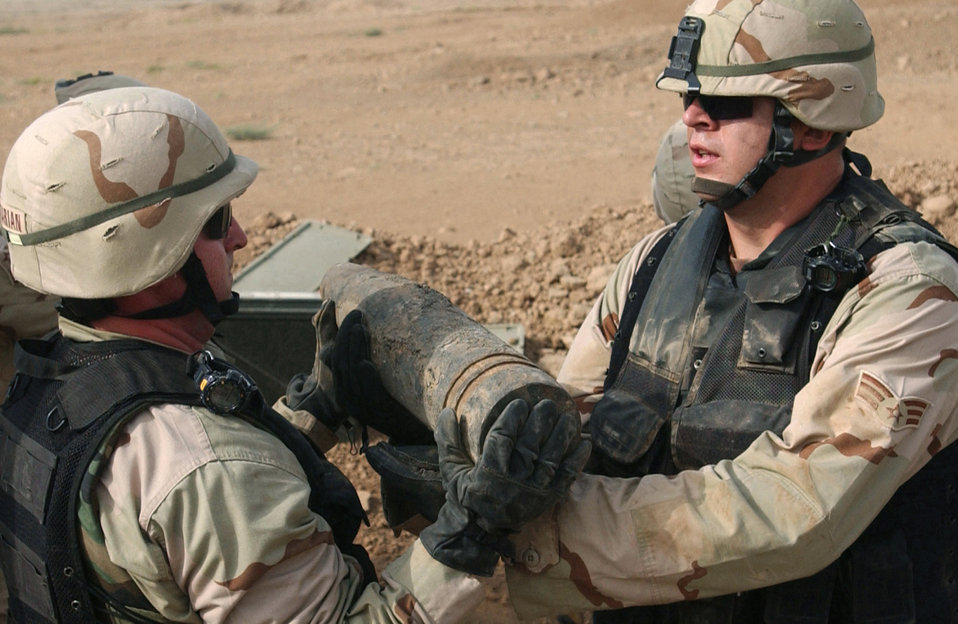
Bombs away

KIRKUK AIR BASE, Iraq (AFPN) -- Senior Airman Randall Peterson hands a live round to Capt. Brian Nazarian. Munitions were found throughout the Kirkuk region and destroyed by explosive ordnance disposal Airmen. Airman Peterson is deployed from Spangdahlem Air Base, Germany, and Captain Nazarian is from Moody Air Force Base, Ga. They are assigned to the 506th Expeditionary Civil Engineer Squadron here.